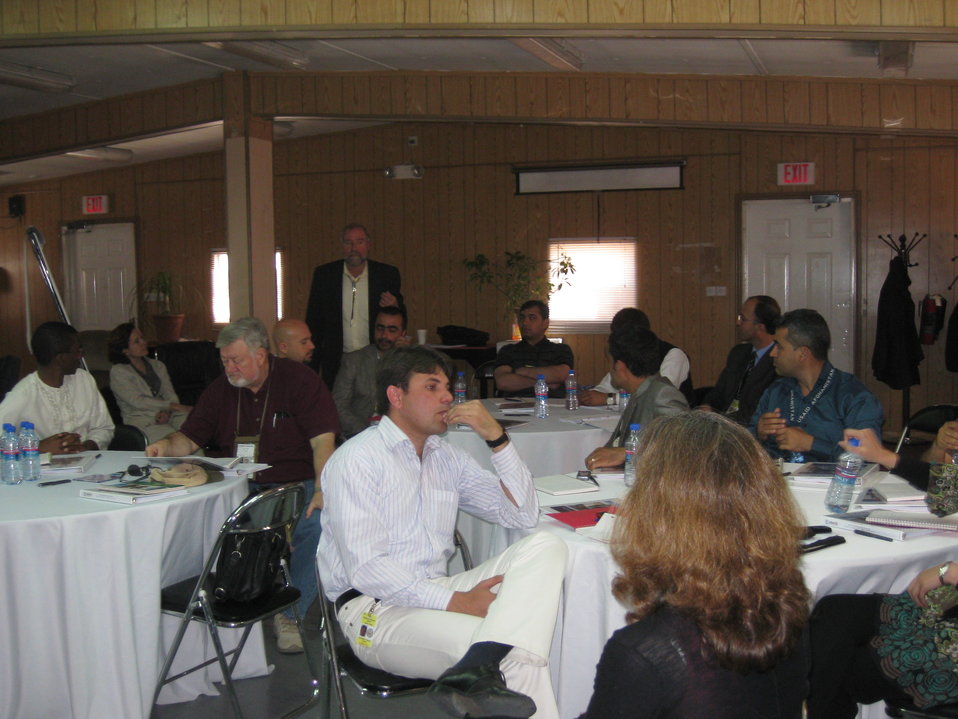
Afghan Youth Voices 020